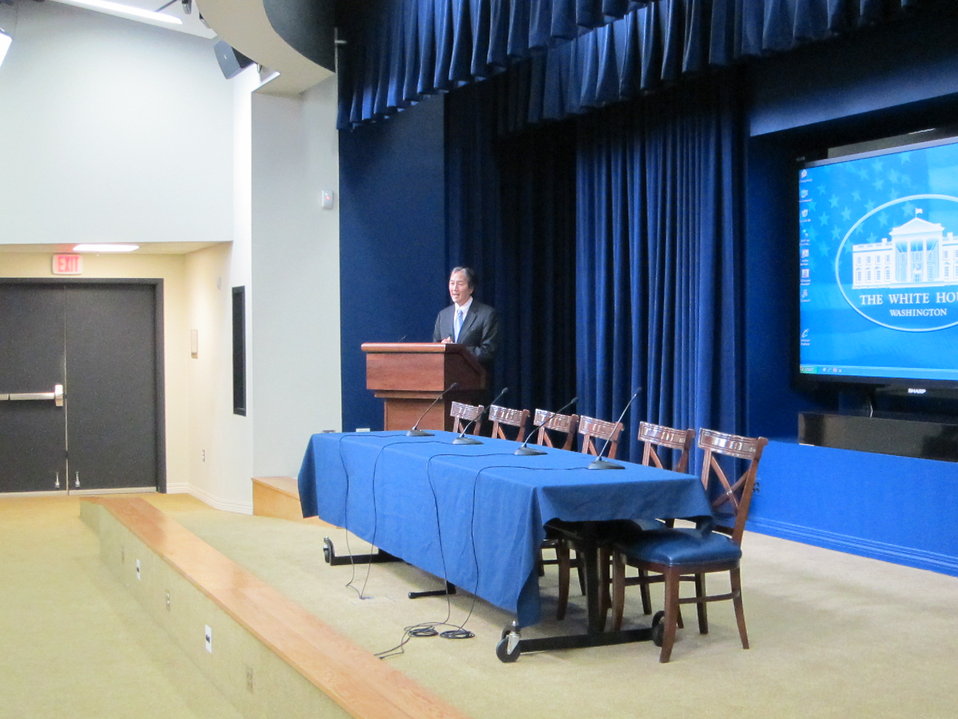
WH 2012 World Hepatitis Day Event